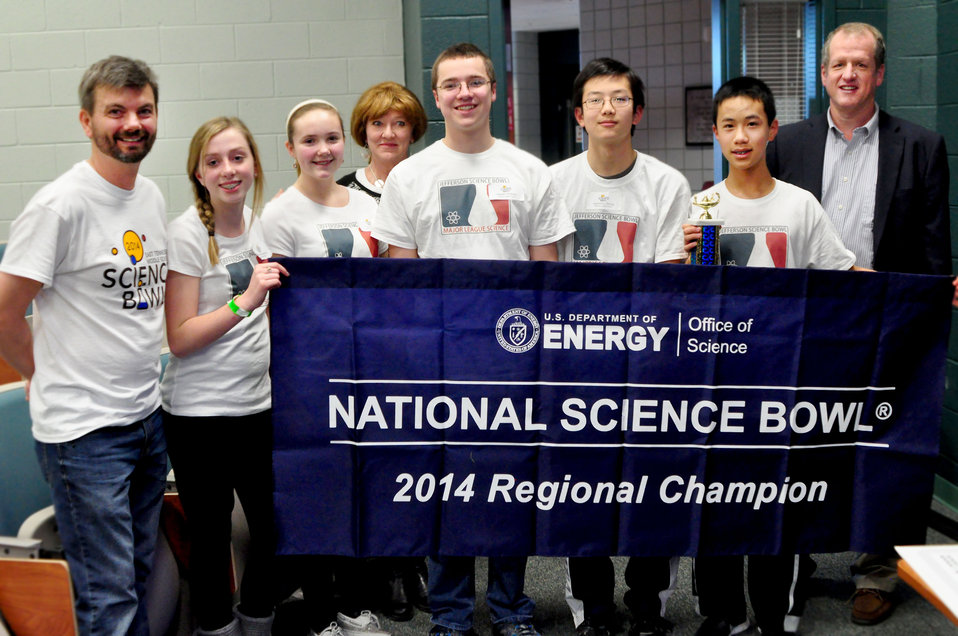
Jefferson Middle First Place DOE Middle School Science Bowl

14-017 DOE photo Lynn Freeny 2-1-2014 Oak Ridge Tennessee